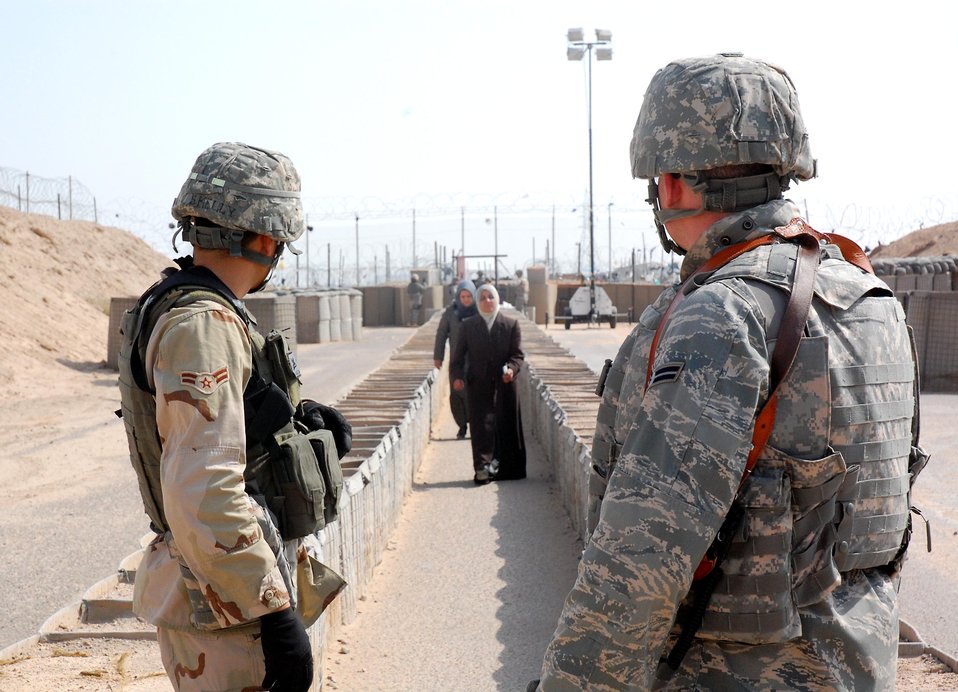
Airmen perform unique missions in Iraq

Airman 1st Class Shane Kelly (left) and Airman 1st Class Russ Stiegemeier prepare to process Iraqis Feb 10 who are visiting family members detained in the Theater Internment Facility at Camp Bucca, Iraq. Airmen deployed to the 886th Expeditionary Security Forces Squadron operate the TIF's vigorous visitation program which houses detainees who have been determined to be a security threat against Iraqi citizens or coalition forces. More than 1,700 friends and family members visit the detainees each week. Airman Kelly is deployed from Hickam Air Force Base, Hawaii and Airman Stiegemeier is deployed from Malmstrom AFB, Mont. Both are assigned to the 886th ESFS.